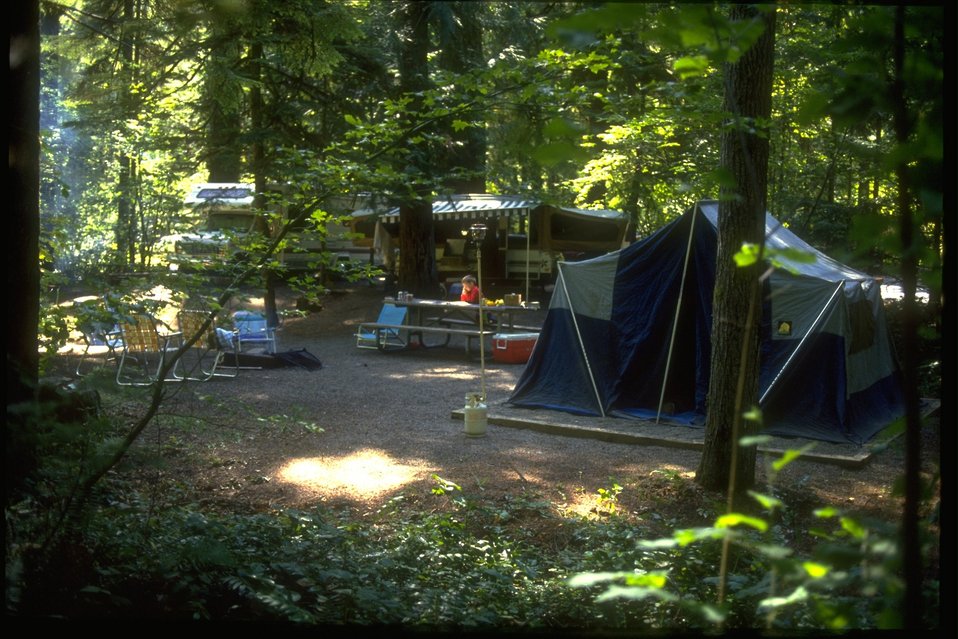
A campsite along the North Umpqua River.